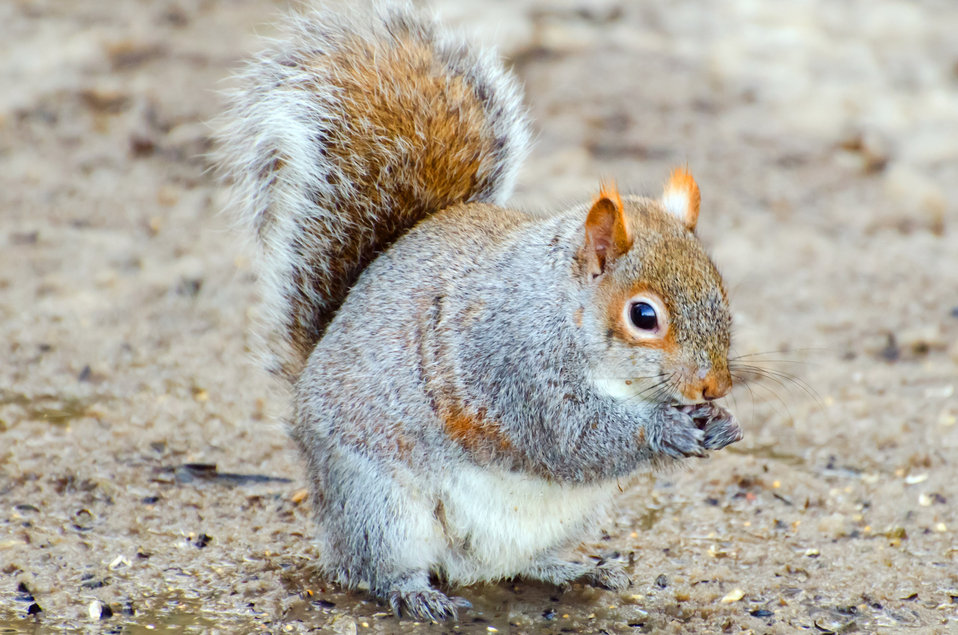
Squirrel - macro.